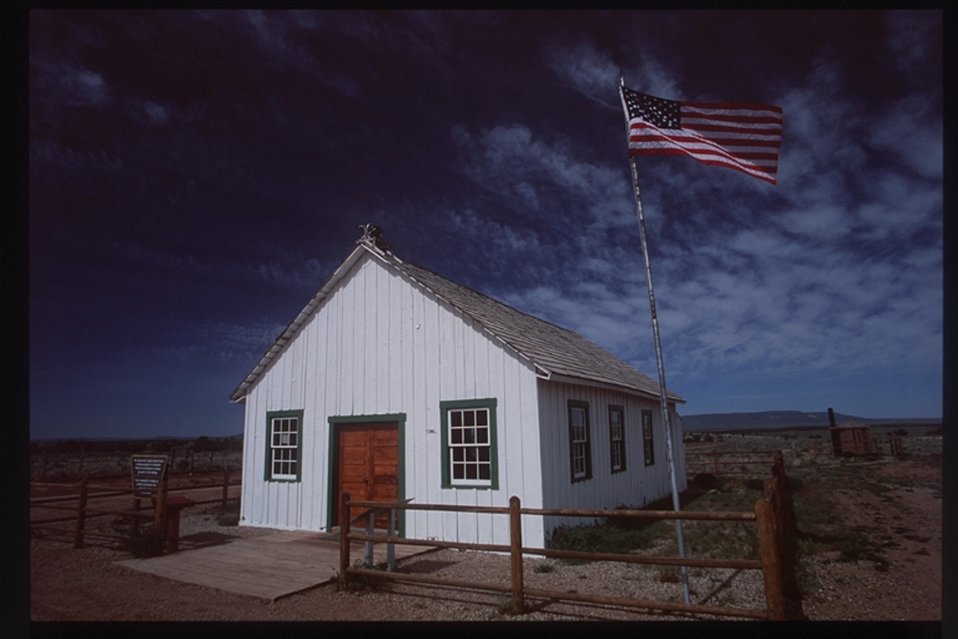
Mt. Trumball Schoolhouse.